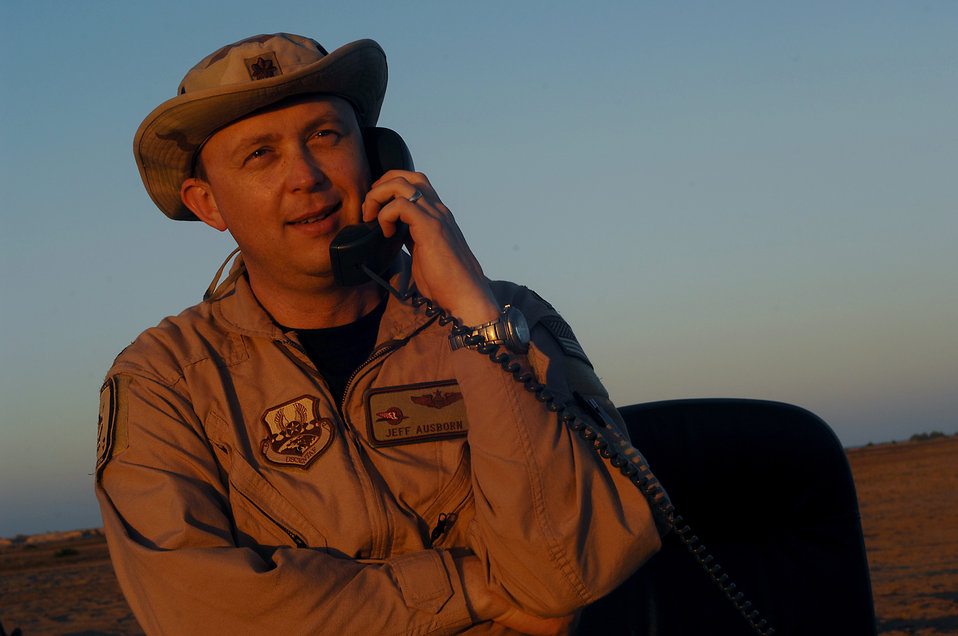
Randolph AFB pilot killed in Afghanistan

Maj. Jeff Ausborn was killed April 27, 2011, when a shooter opened fire at Kabul International Airport killing eight U.S. service members and one contractor. Major Ausborn an instructor pilot assigned to the 99th Flying Training Squadron.